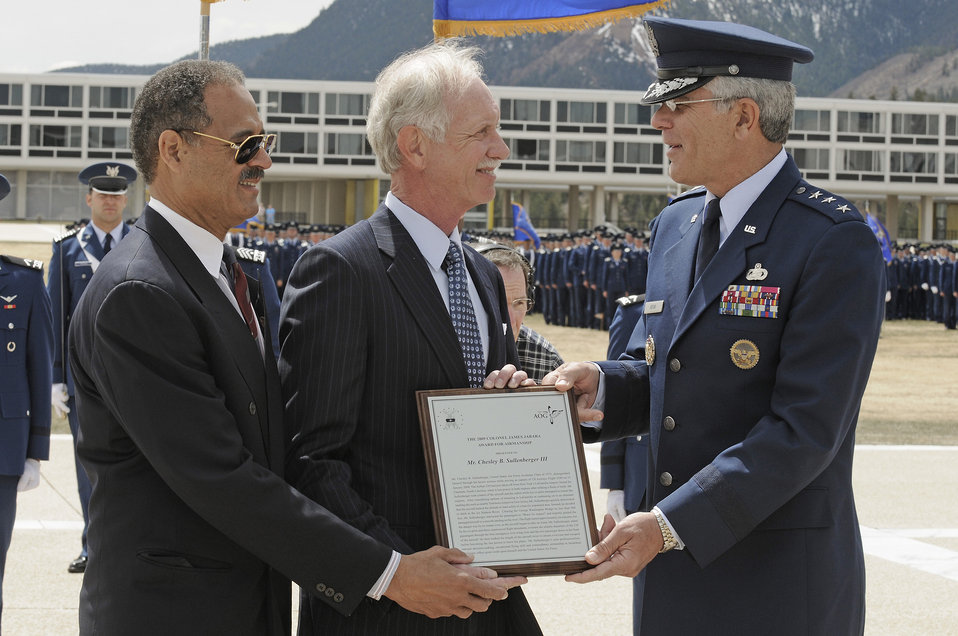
Hero of the Hudson visits alma mater

Air Force Academy Superintendent Lt. Gen. John F. Regni presents the 2009 Col. James Jabara award to 1973 graduate and classmate Chesley